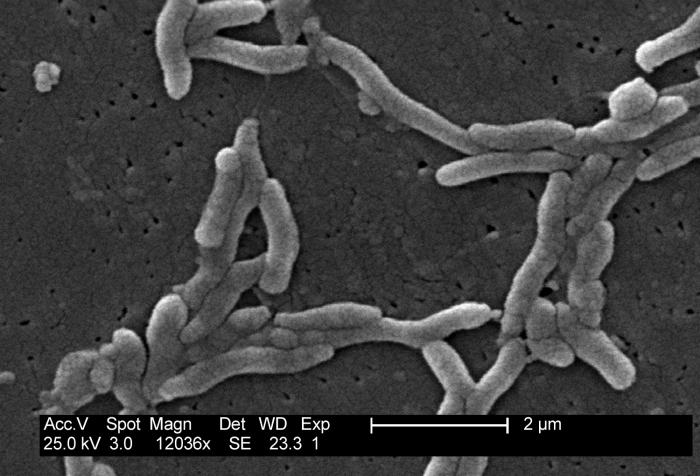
This scanning electron micrograph depicts a grouping of Gram-negative Flexispira rappini bacteria, magnified 12,036x.